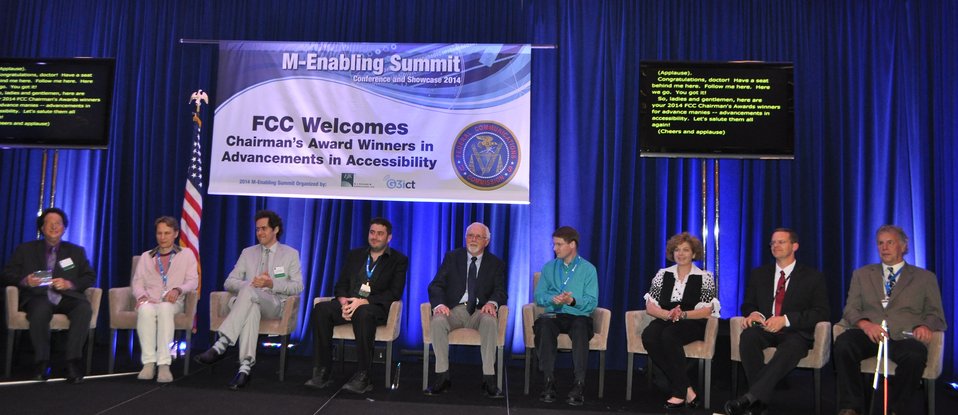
6.9.2014 Third Annual Chairman’s Awards for Advancement in Accessibility

Chairman AAA Recipients